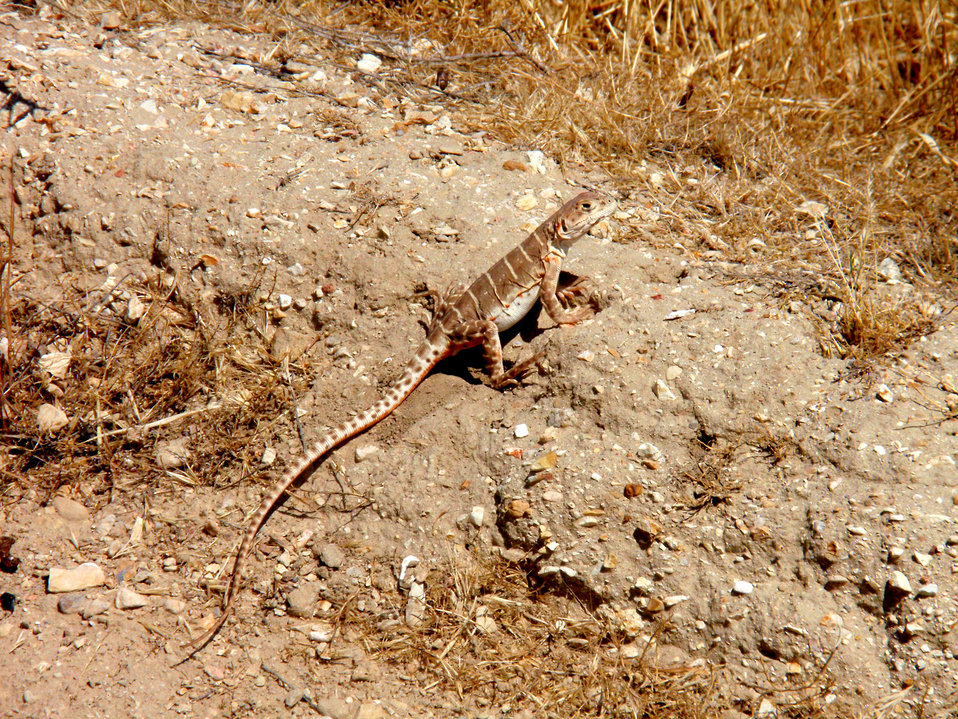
Blunt-nosed leopard lizard

The endangered Blunt-nosed leopard lizard is found only in the San Joaquin Valley and adjacent foothills, as well as the Carrizo Plain and Cuyama Valley. It inhabits open, sparsely vegetated areas of low relief on the valley floor and the surrounding foothills. It also inhabits alkali playa and valley saltbush scrub.